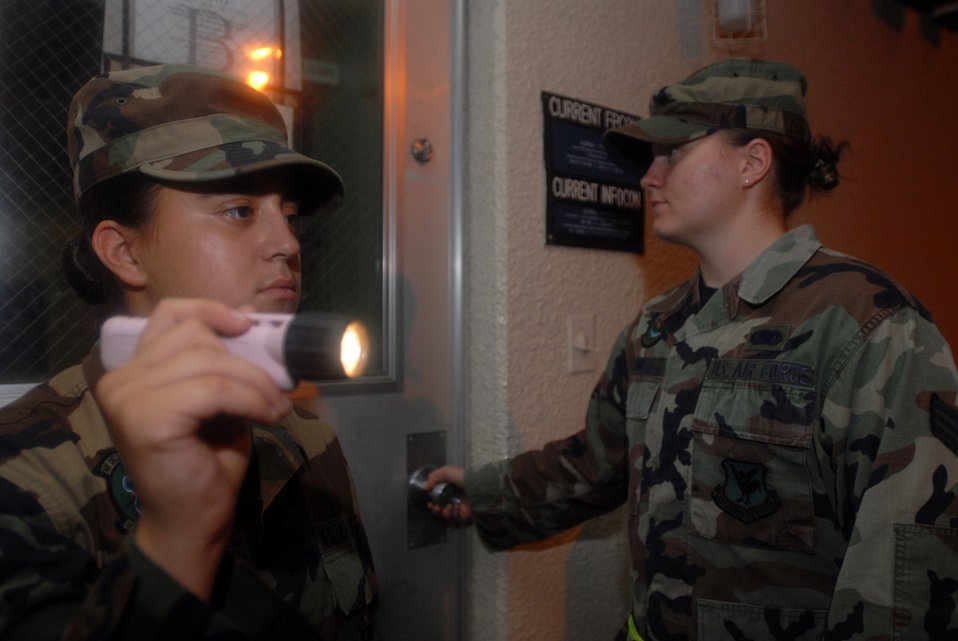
Kadena begins selective arming program

Airman 1st Class Christina Martinez scans the perimeter while Senior Airman Rebecca Trammell secures all doors during a base exercise Aug. 24 at Kadena Air Base, Japan. Both Airmen took the selective arming course, which enables them to protect their base and its assets. The three-day exercise them the opportunity to demonstrate their skills. Airman Martinez works in mobility with the 18th Logistics Readiness Squadron and Airman Trammell is a weapons manager with 18th LRS.